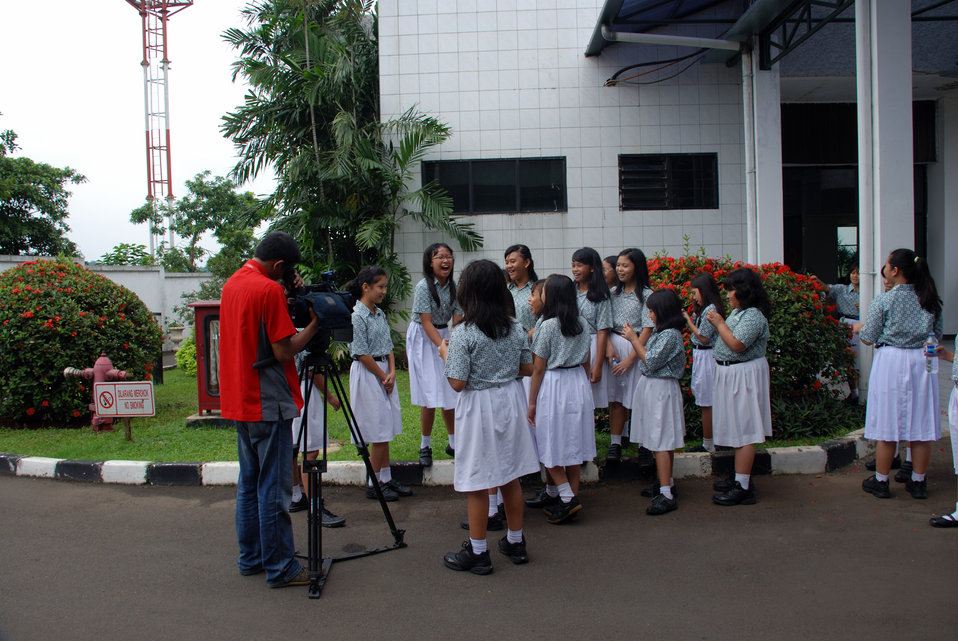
Behind the Scenes: Indonesian Students Prepare for Secretary Clinton's Arrival

Television crew interviews students of Menteng Elementary School No. 1 at
Halim Airport before U.S. Secretary of State Hillary Rodham Clinton arrives in Jarkarta, Indonesia during her visit February 18, 2009.